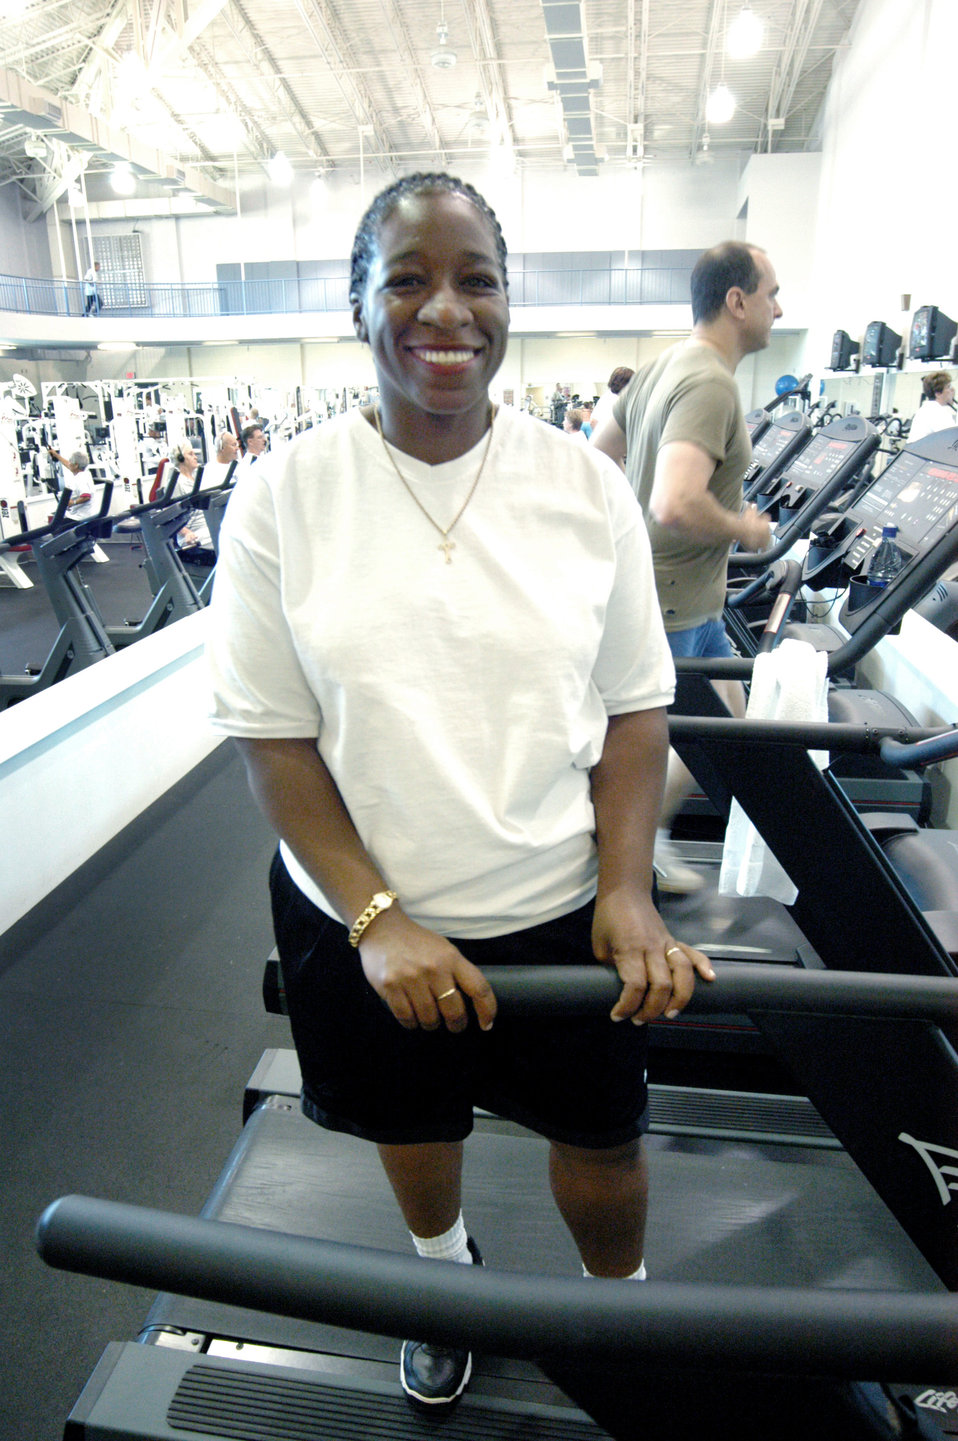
Robins employee sheds 150 pounds

ROBINS AIR FORCE BASE, Ga. -- Irish Frederick exercises four to five days a week at the fitness center here. She drinks water and eats healthy foods. She lost more than 150 pounds and dropped 12 dress sizes.